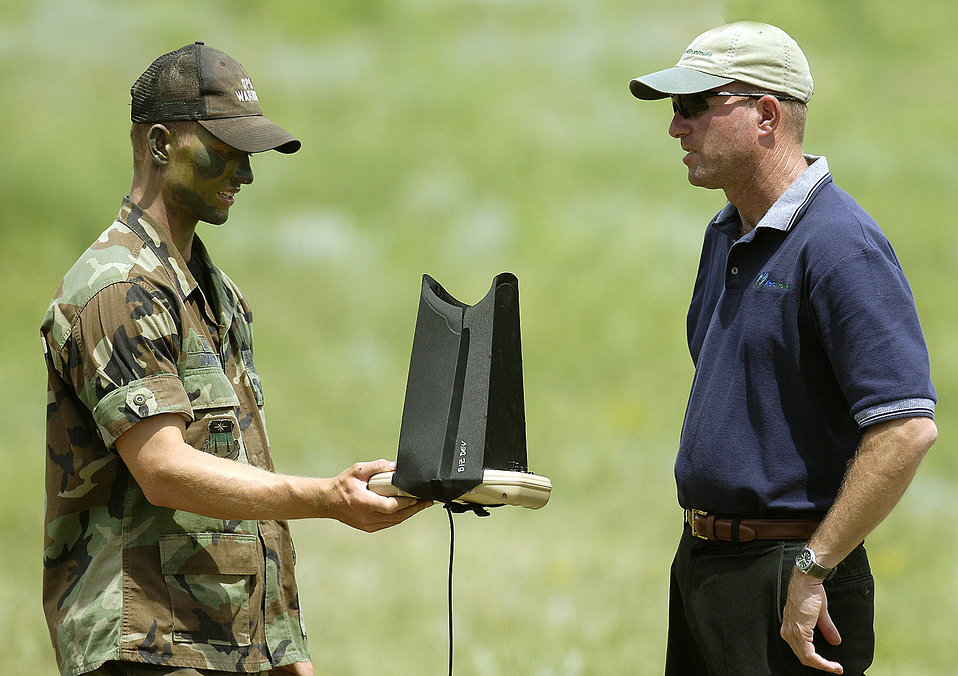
ROVER adds extra set of eyes to sky

A basic cadet holds the controller for an unmanned aerial vehicle used during a Remote Operated Video Enhanced Receiver demonstration July 28 at the U.S. Air Force Academy. The ROVER is basically a laptop with antennas that receives video captured by a UAV that shows real-time, nearby dangers allowing ground troops to make quick decisions regarding air strikes.